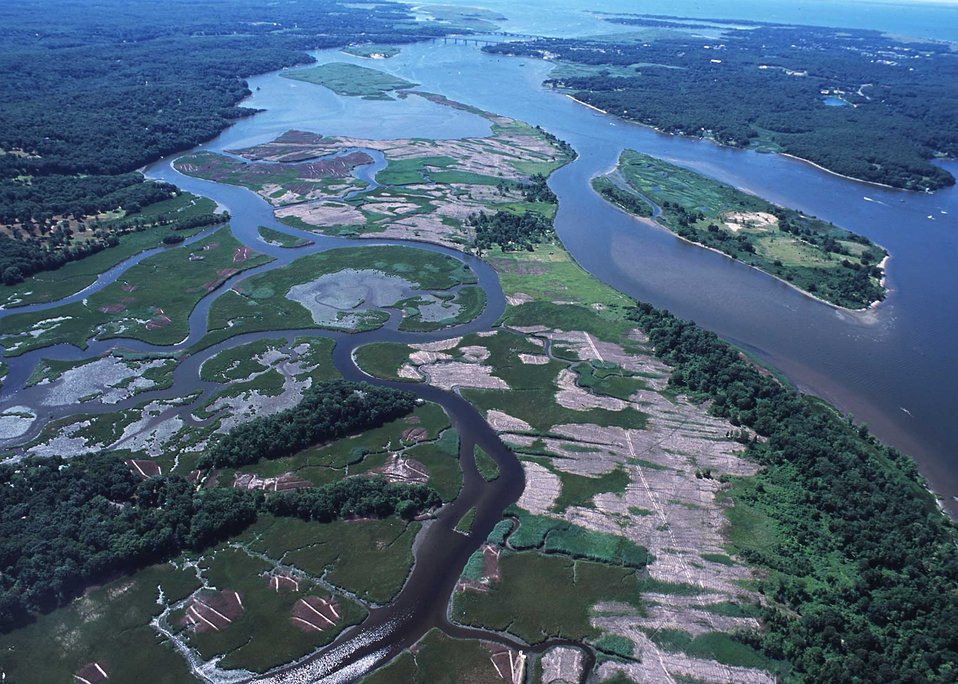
Connecticut River tideland habitat undergoing invasive plant control (light colored areas) and native plant community restoration.